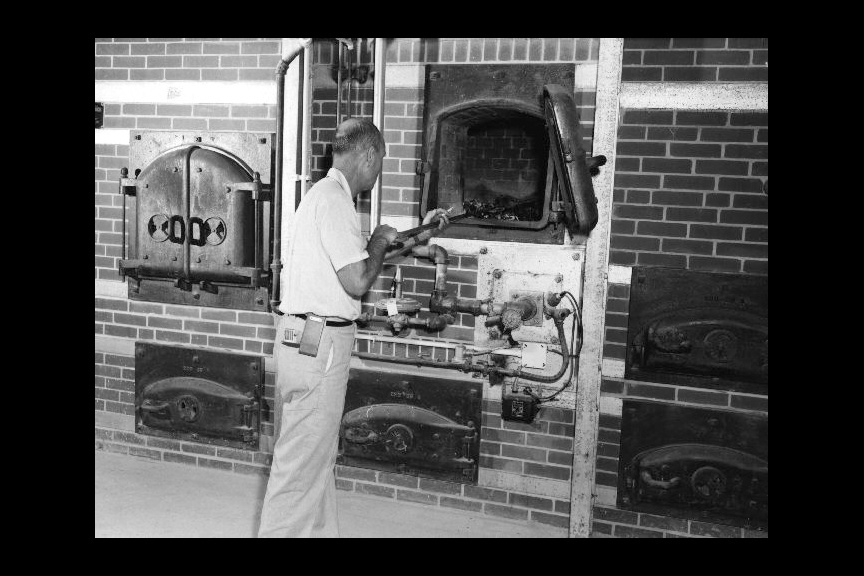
Employee operating an incinerator at the Centers of Disease Control (CDC).